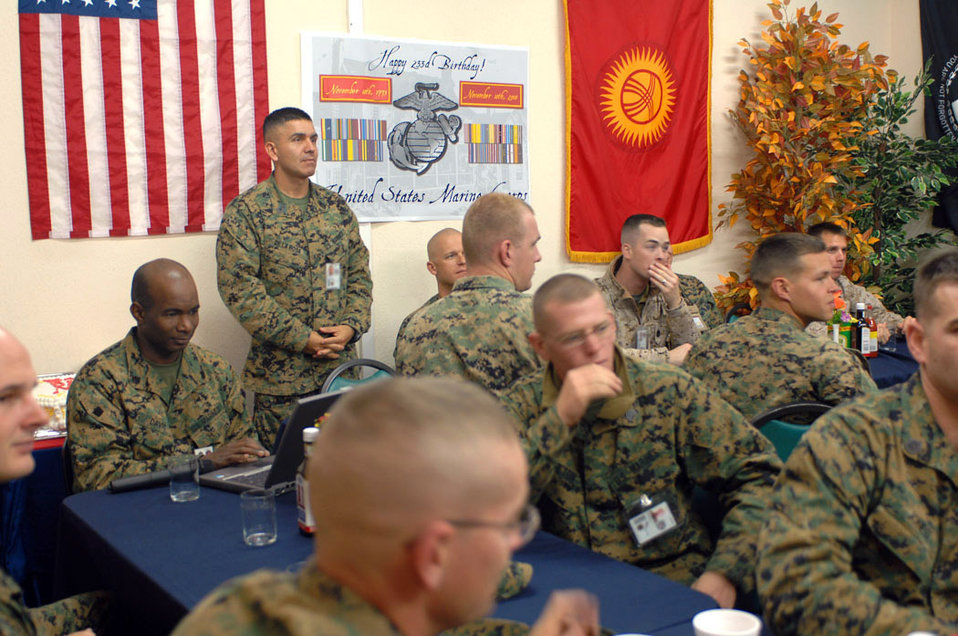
Marines celebrate Marine Corps' 233rd birthday at Manas

Marines enjoy food and cake at the Ala Too Dining Facility during a celebration of the Marine Corps' 233rd birthday at Manas Air Base, Kyrgyzstan, Nov. 10. The group of 30 Marines deployed from the 3rd Marine Division, Okinawa, are en route to support Operation Enduring Freedom.